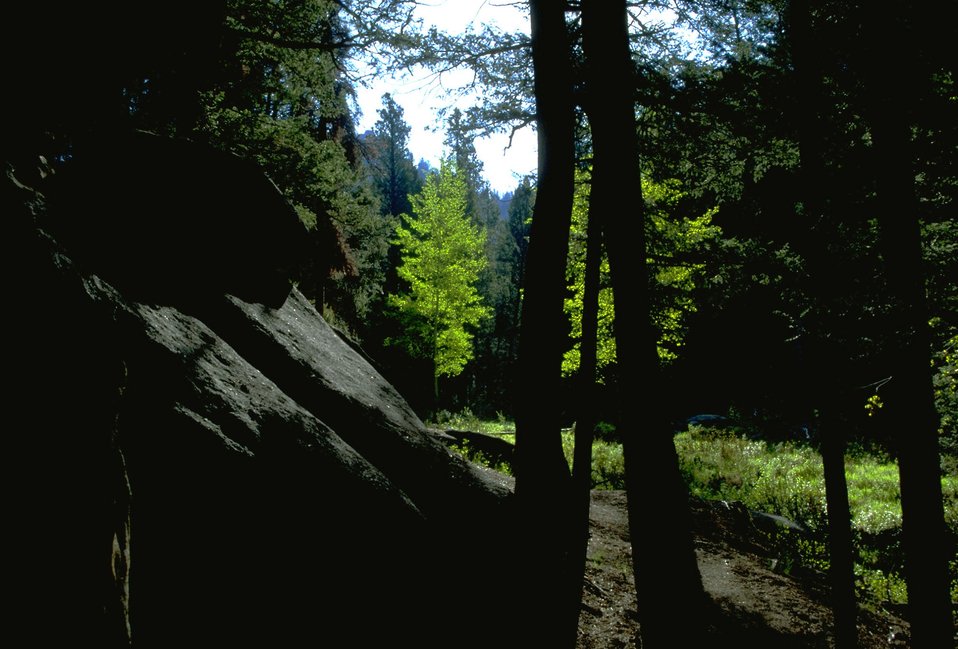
Trail among the trees and rocks